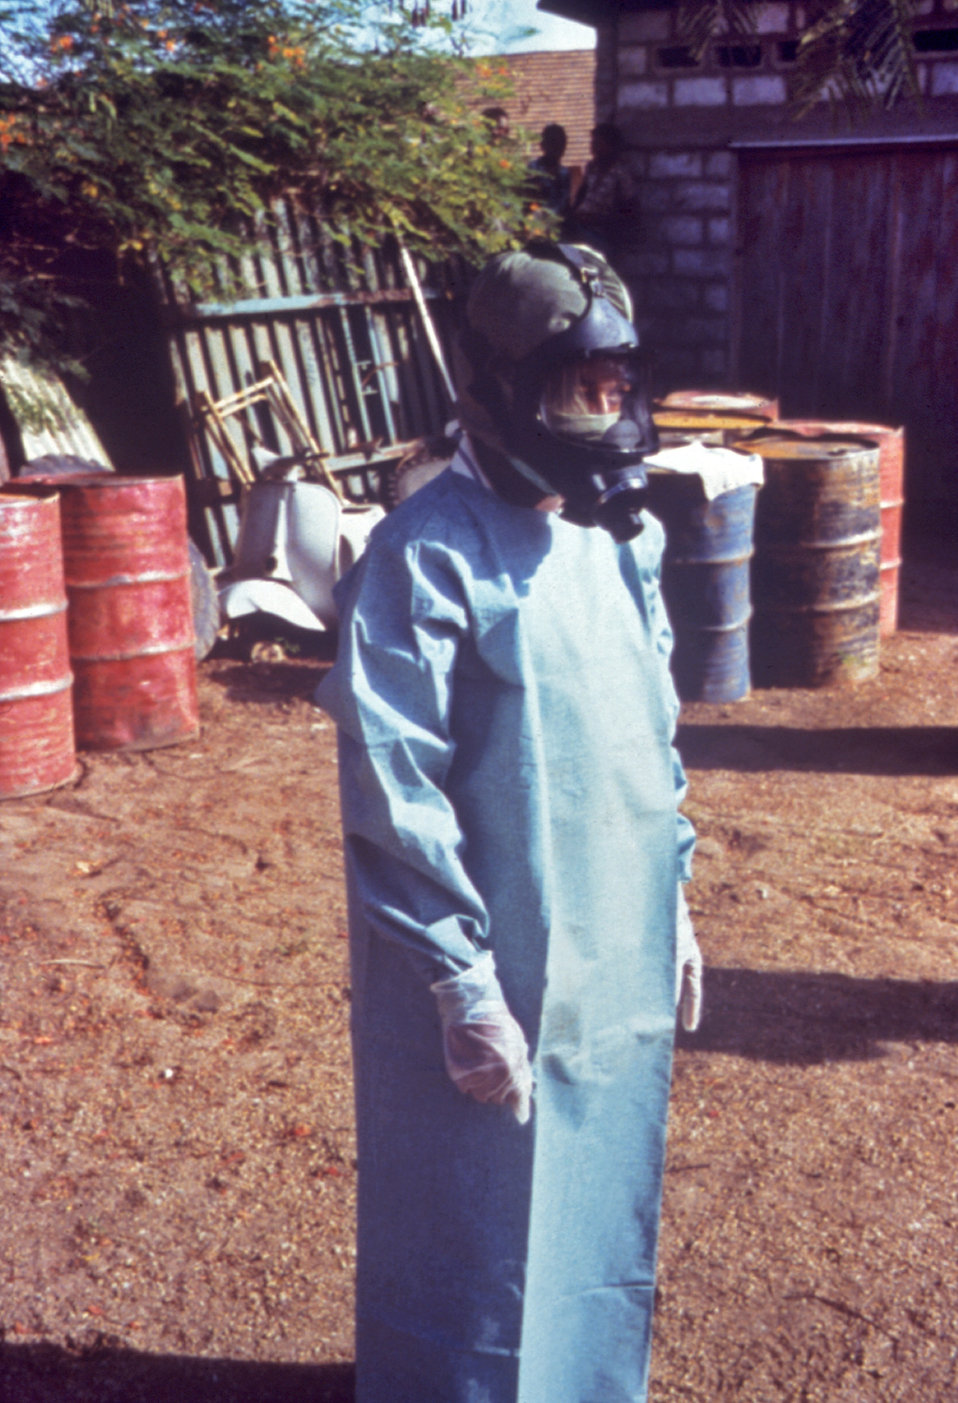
This field technician is demonstrating the protective clothing, i.e., gown, gloves and mask, that was used to protect workers and attendants while they were treating Ebola patients in Zaire, 1976.